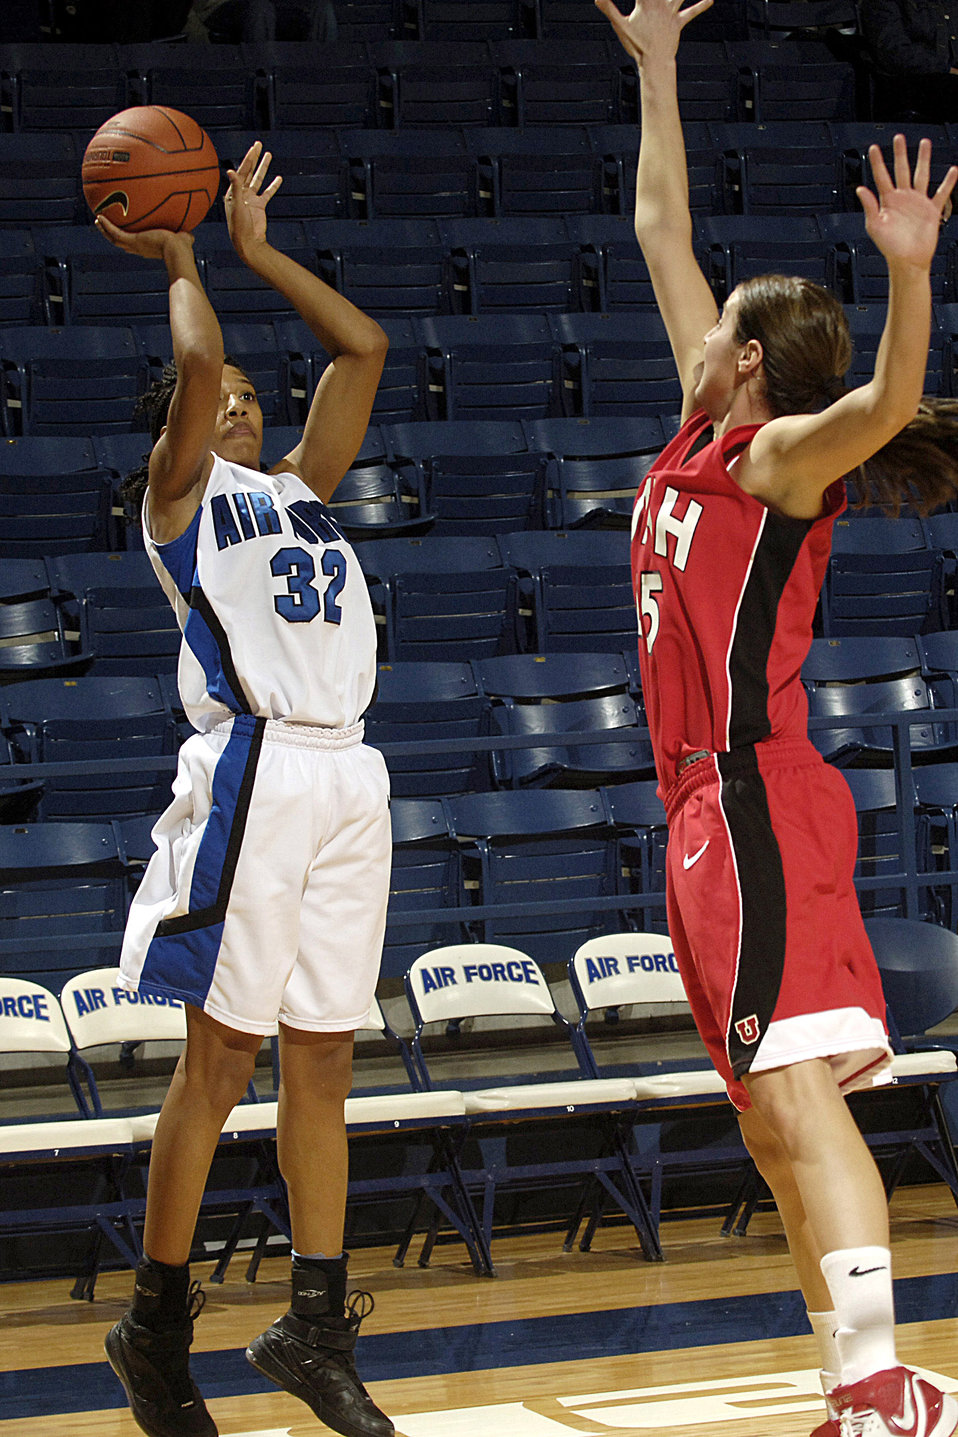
Lady Falcons fall to Utah

U.S. Air Force Academy Falcon senior forward Alecia Steele shoots during the 60-50 loss against Utah Jan. 9 in Clune Arena at Colorado Springs, Colo. The Falcons lost season scoring and rebounding leader Alecia Steele to an injury with a minute left to go in the half. Steele, who finished with eight rebounds and six points, reaggravated an ankle injury suffered earlier in the season and did not return in the second half.